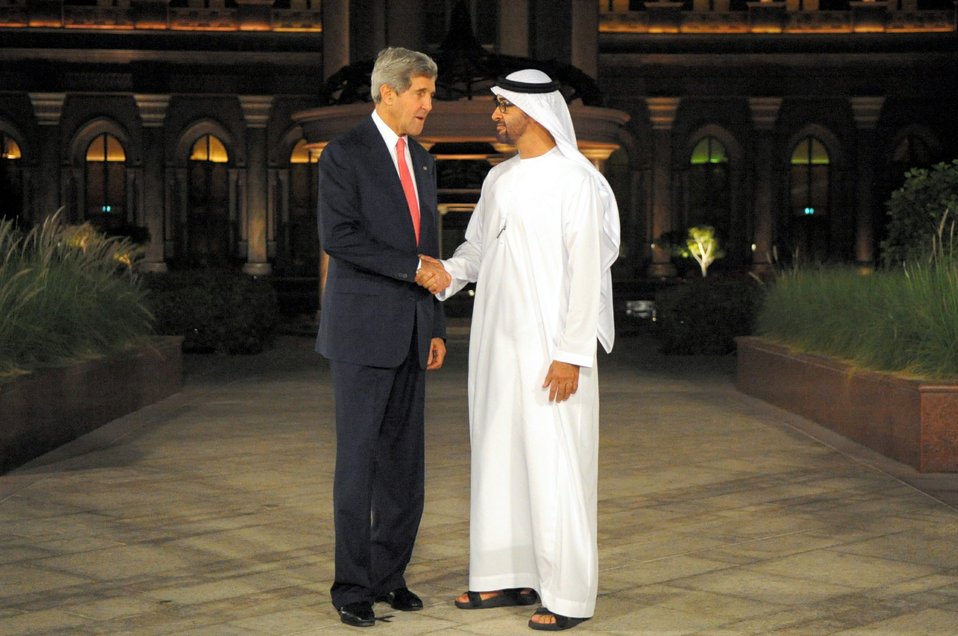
Secretary Kerry is Greeted by Abu Dhabi Crown Prince Mohamed bin Zayed Al Nayhan

Abu Dhabi Crown Prince Mohamed bin Zayed Al Nayhan welcomes U.S. Secretary of State John Kerry to a working dinner in Abu Dhabi on November 10, 2013.